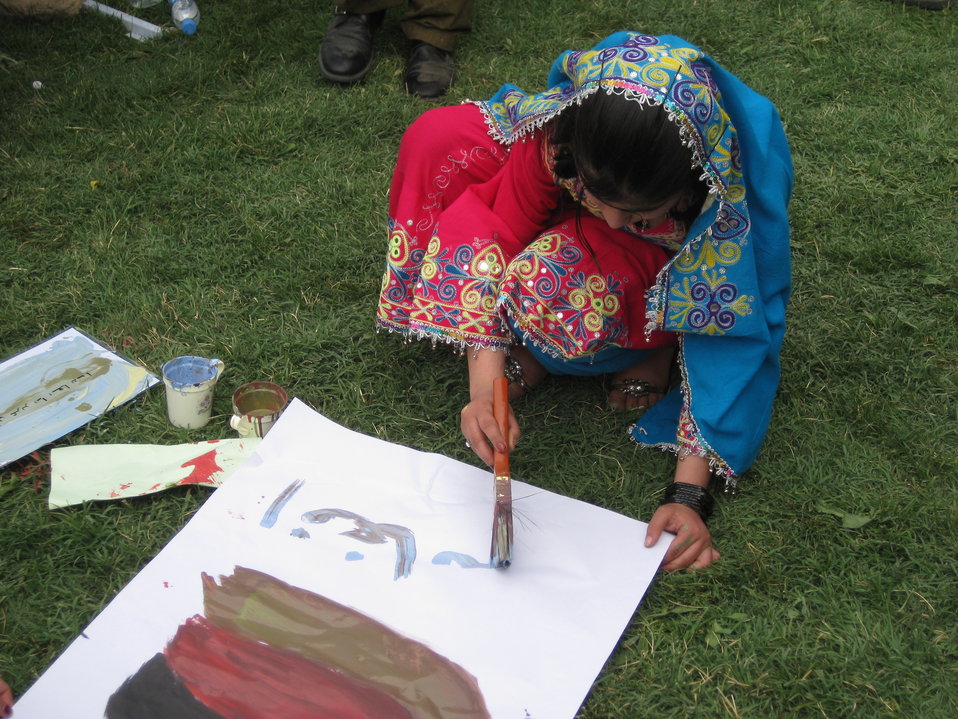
Afghan Youth Voices 085